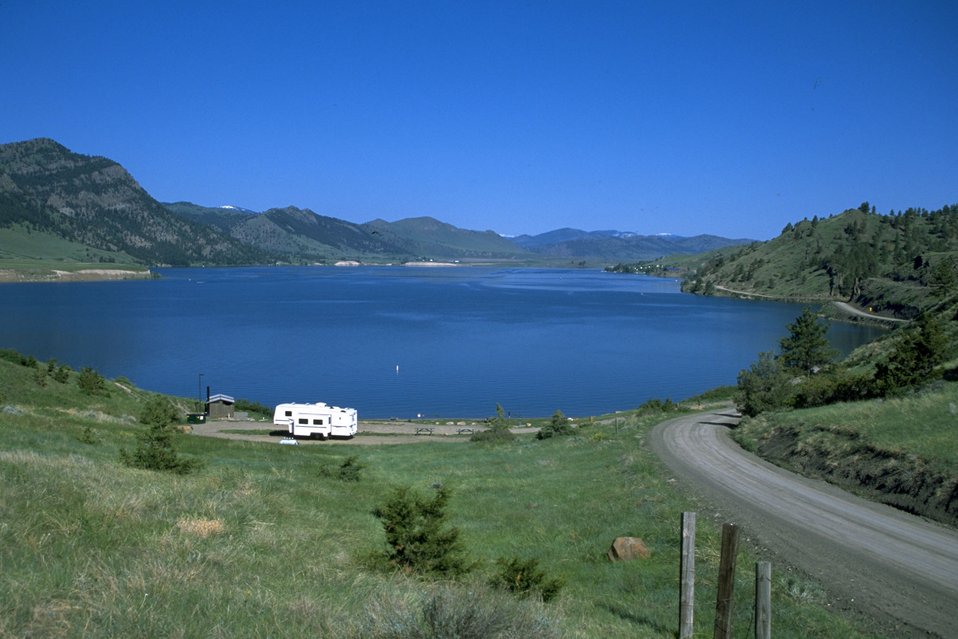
Scenic view of Holter Lake at Departure Point